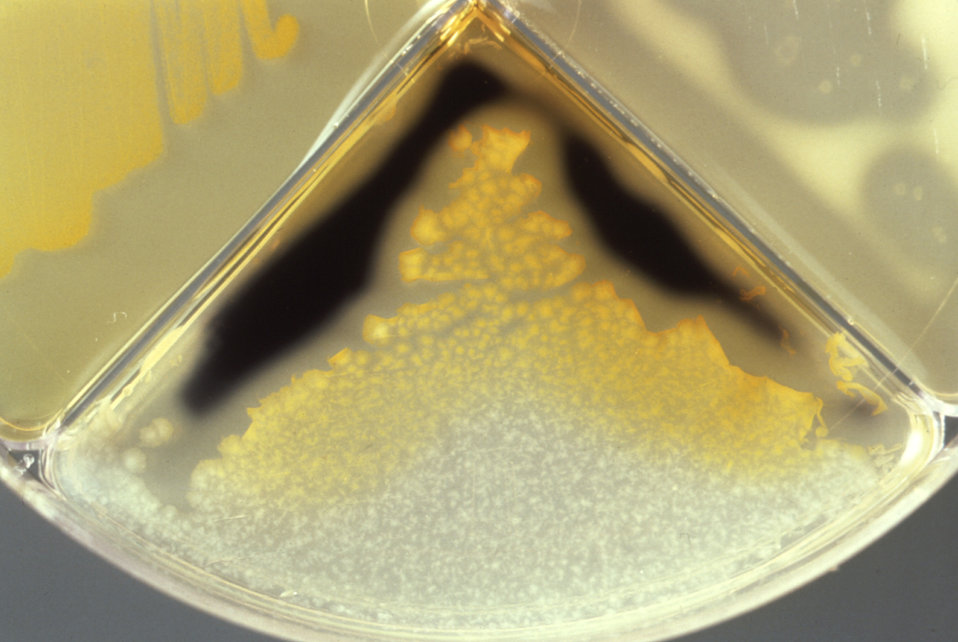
This Presumpto II quadrant plate developed by the CDC's Anaerobe Section, is showing a positive starch hydrolysis reaction.